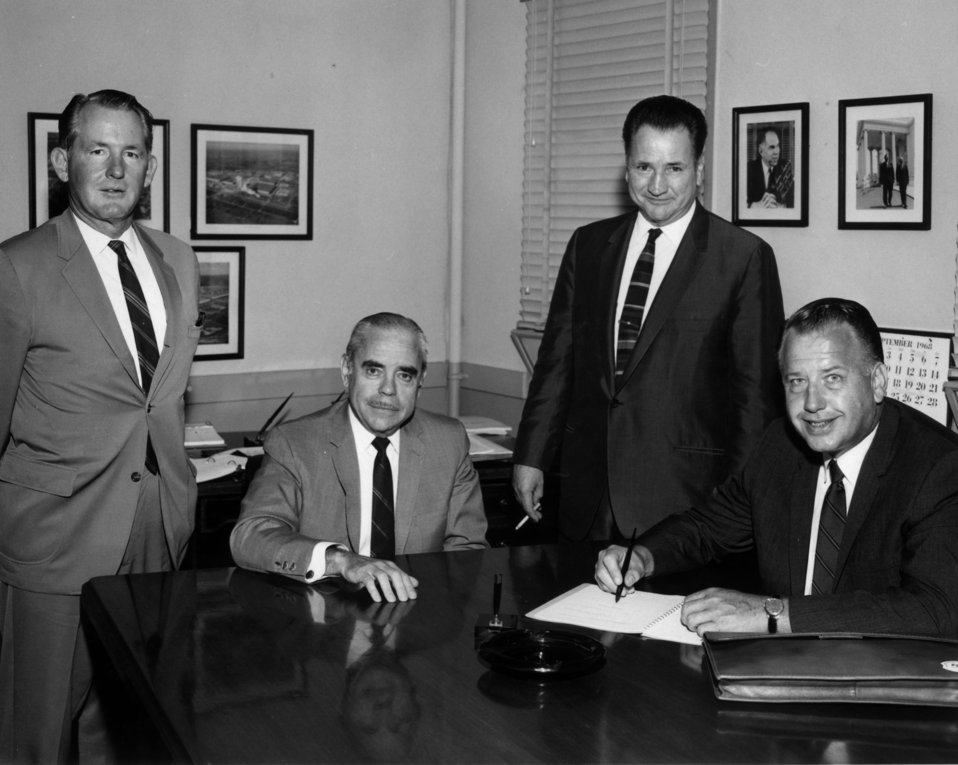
Group in AEC Manager Sam Sapirie office Oak Ridge

68-0 DOE photo Frank Hoffman 1968 Oak Ridge Tennessee